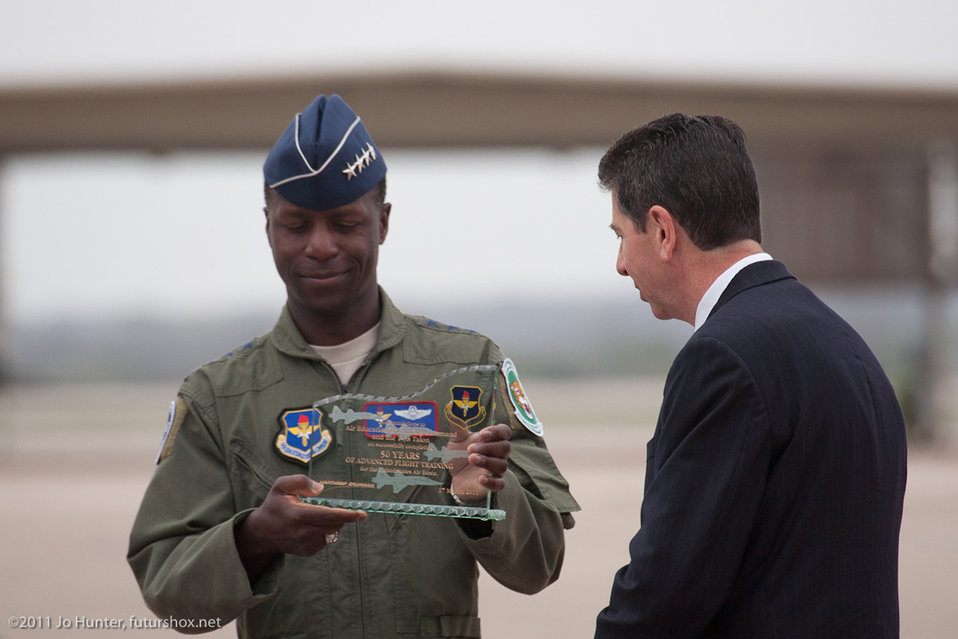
T-38

Gen. Edward A. Rice Jr. receives a commemorative plaque from Tony Imondi, a Northrop Grumman official, March 17, 2011, at Randolph Air Force Base, Texas. The plaque commemorates 50 years of advanced flight training aboard the Northrop-built T-38 Talon. General Rice is the commander of Air Education and Training Command.